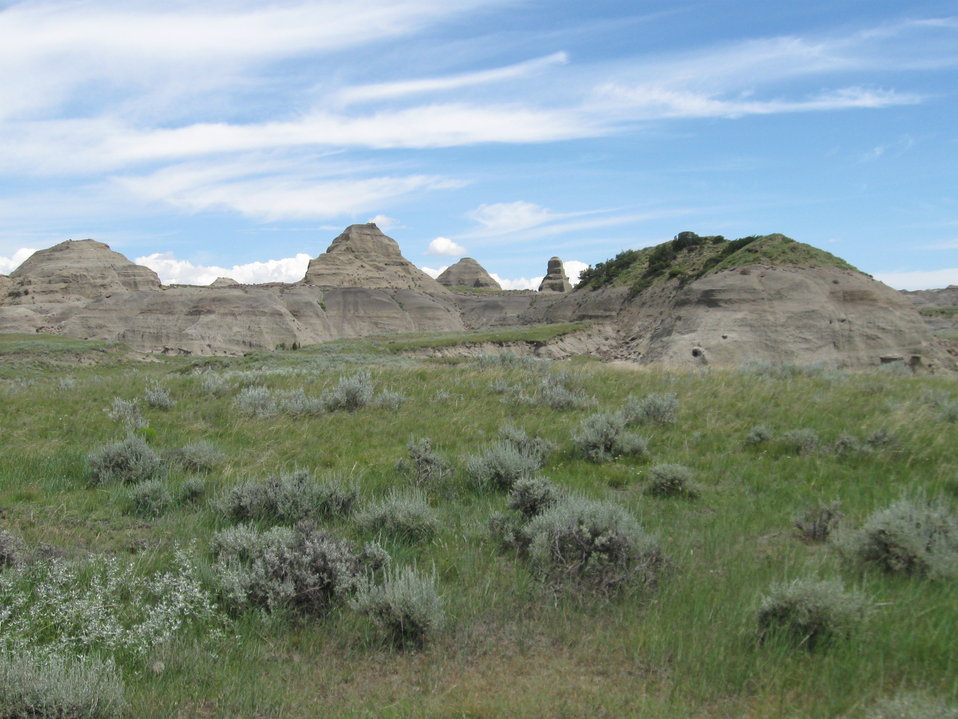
Sand Arroyo

An area on the east side of CMR known as the Sand Arroyo badlands.